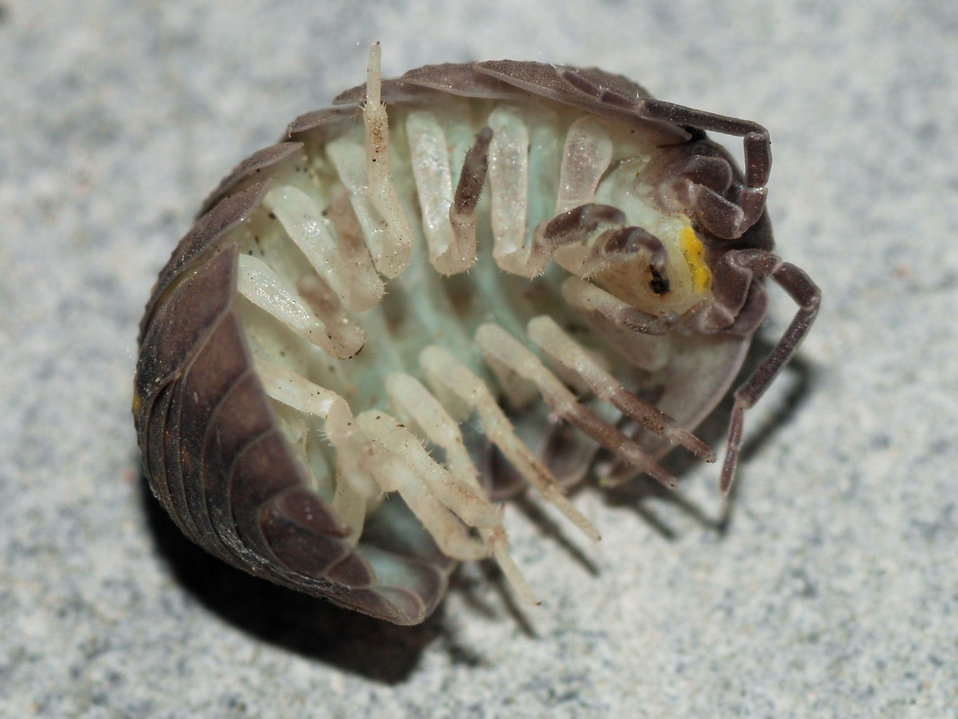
Armadillidium granulatum Brandt, 1833: Ventral view. Français : Armadillidium granulatum, un cloporte commun de méditerranée. Vue ventrale. Les cloportes forment un sous-ordre des crustacés isopodes, les Oniscides. Les cloportes du genre Armadillidium sp. ont la possibilité de se rouler en boule, ce qui est à l'origine de leurs noms dans certaines langues, dont l'anglais (par ex. pill bug, litt. bêbête-pilule).